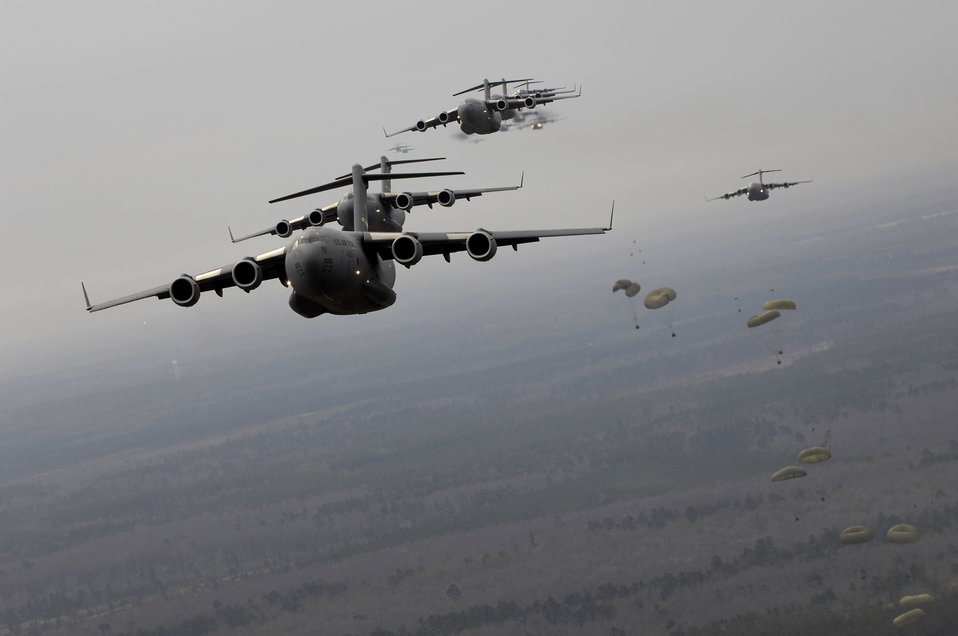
Formation

C-17 Globemaster IIIs participate in a large formation exercise over the coast of Charleston, S.C., Dec. 21. The C-17s, assigned to the 437th and 315th Airlift Wings at Charleston Air Force Base, S.C., were part of the largest formation in history from a single base.